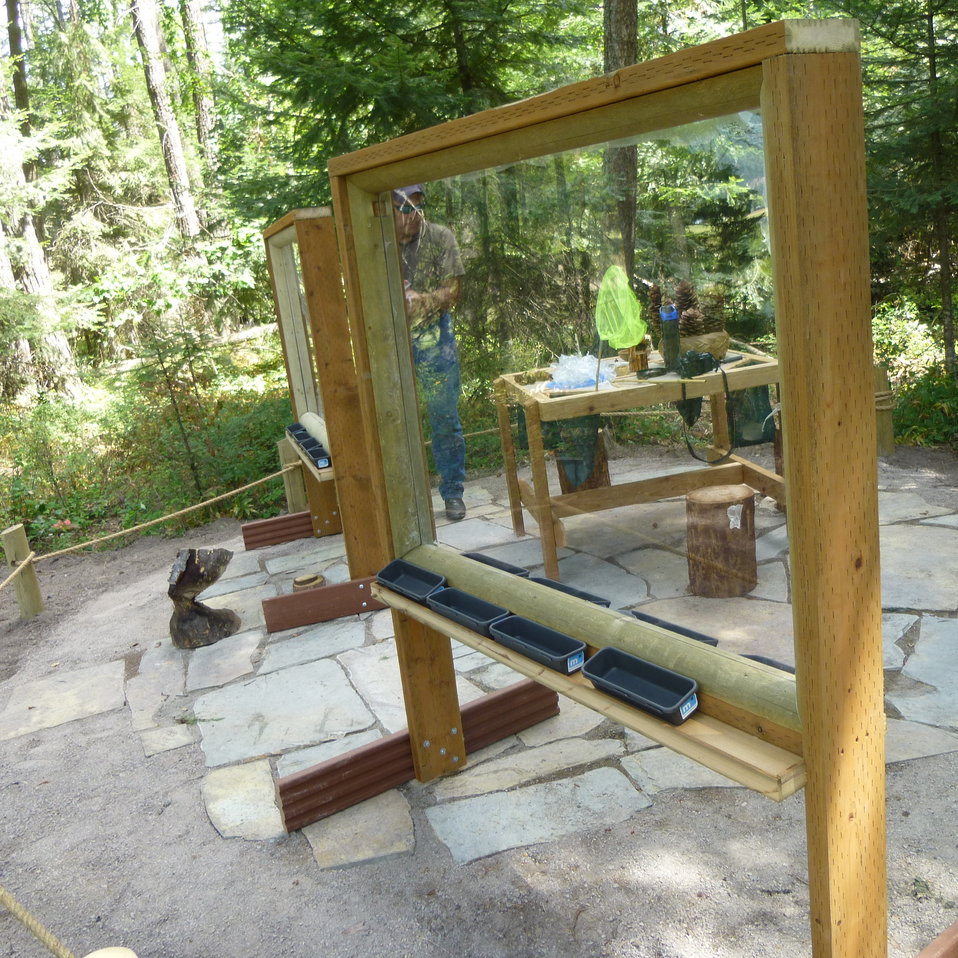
Creston's Nature Explore Outdoor Classroom

This area encourages children to look for beauty in nature and inspires them to use natural items to create interesting patterns, mosaics, and other art.